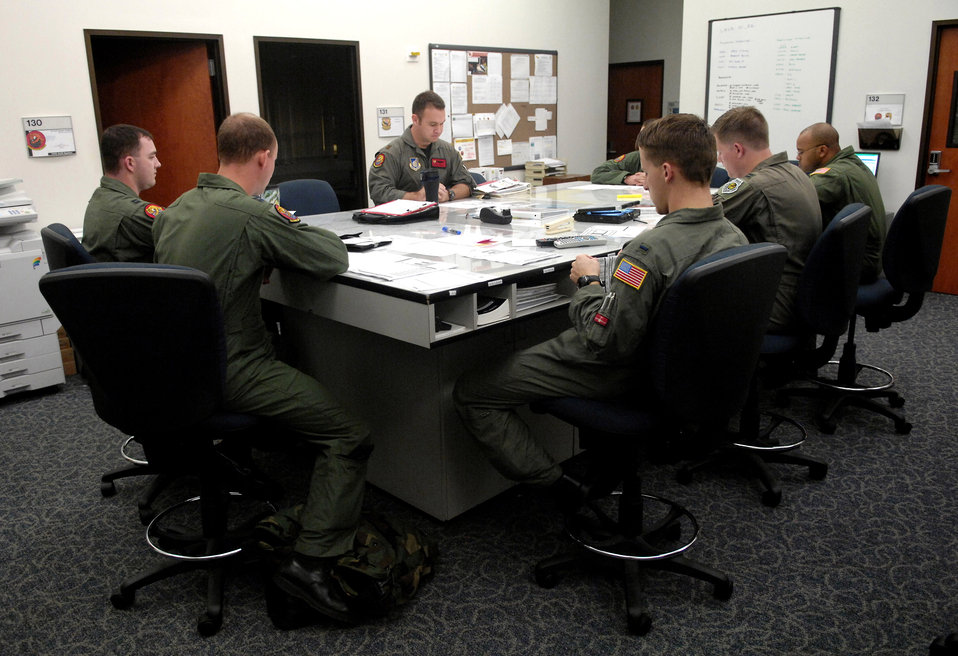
Hickam's C-17s deliver anywhere

Aircrew members conduct a pre-flight briefing Jan. 7 at Hickam Air Force Base, Hawaii, before flying a local training mission on a C-17 Globemaster III. The Airmen are with the 535th Airlift Squadron.